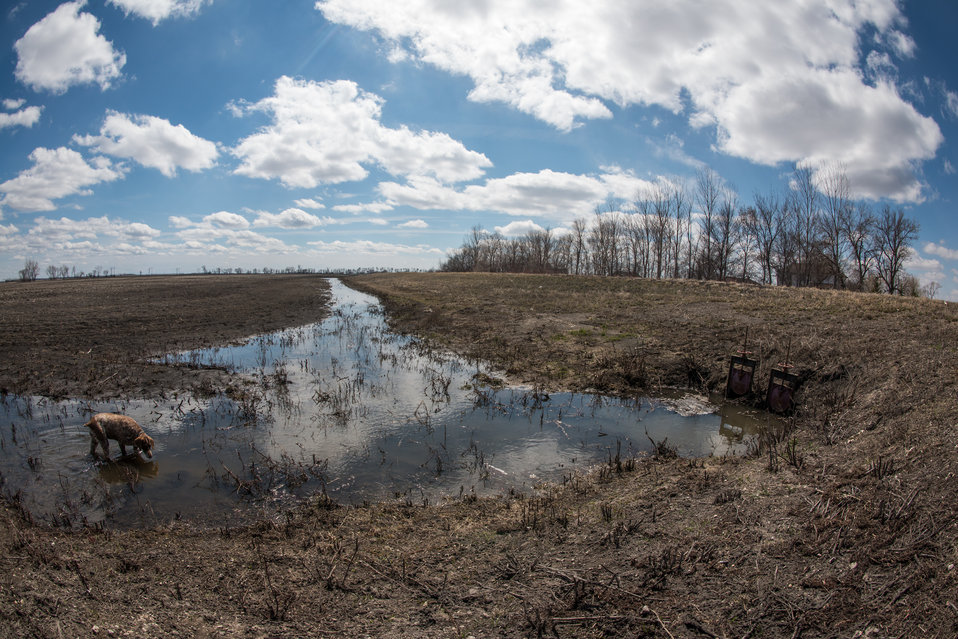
William Lisberg used the U.S. Department of Agriculture (USDA) Environmental Quality Incentives Program (EQIP) to receive an incentive payment to help in the cost of ring dike construction around his farmstead in Cass County, ND, on Tuesday, April 30, 2013. A week ago, the farmstead was covered in snow. Now thawed, the water fills the drainage on the outside of the ring dike. The valves hold back water from his home, farm structures, and equipment.